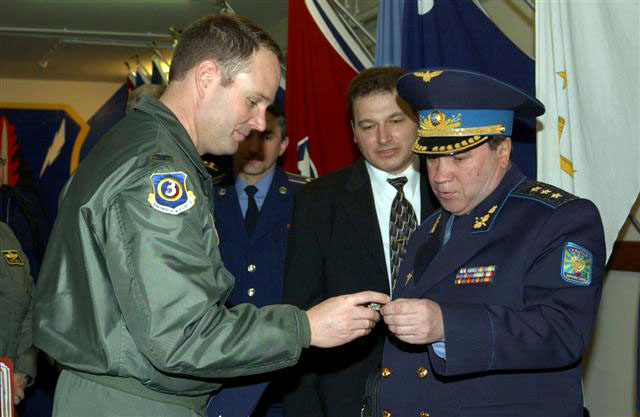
USAFE, Ukrainian air force continue spirit of cooperation

Col. Ty Thomas (left), vice commander of the 603rd Air and Space Operations Center, presents Gen.-Col. Anatoliy Yakovich Toropchyn, chief of the Ukrainian air force, with a squadron coin Jan. 24 at Ramstein Air Base, Germany. General Toropchyn's visit was to familiarize himself with U.S. Air Forces in Europe's senior leadership and enlisted/officer training and development.